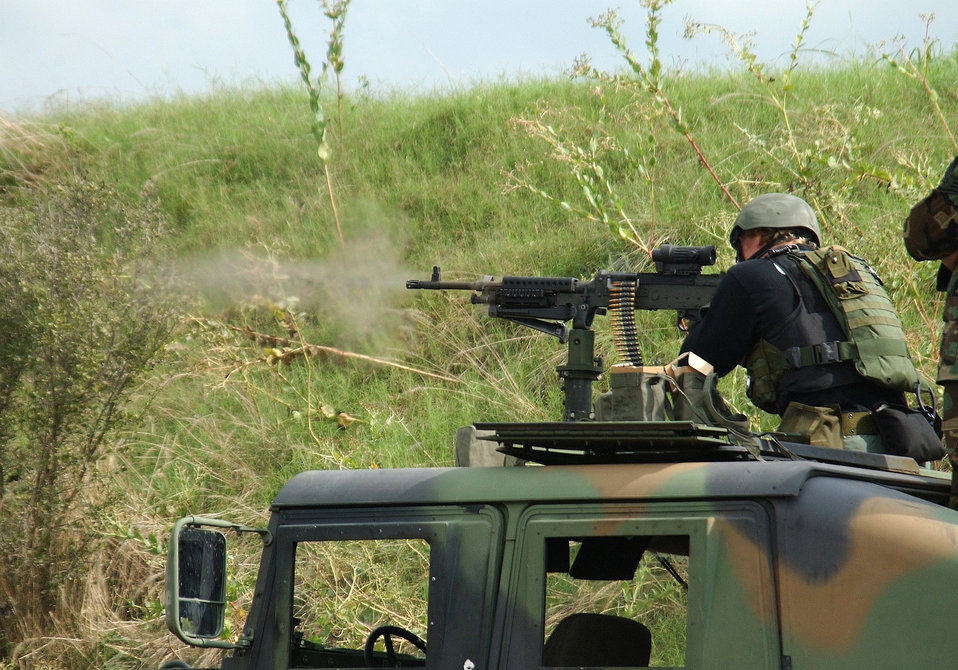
Defender Challenge

LACKLAND AIR FORCE BASE, Texas -- Federal Agent Brian Nestler blasts targets down range with his machine gun during the Defender Challenge 2004 combat weapons event. Agent Nestler is on the Department of Energy team. The annual Defender Challenge here pits security forces teams from Air Force major commands, the Royal Air Force Regiment and the Department of Energy against each other in events that test marksmanship, tactics, physical fitness and teamwork. This year's competition runs Oct. 23 to 28.